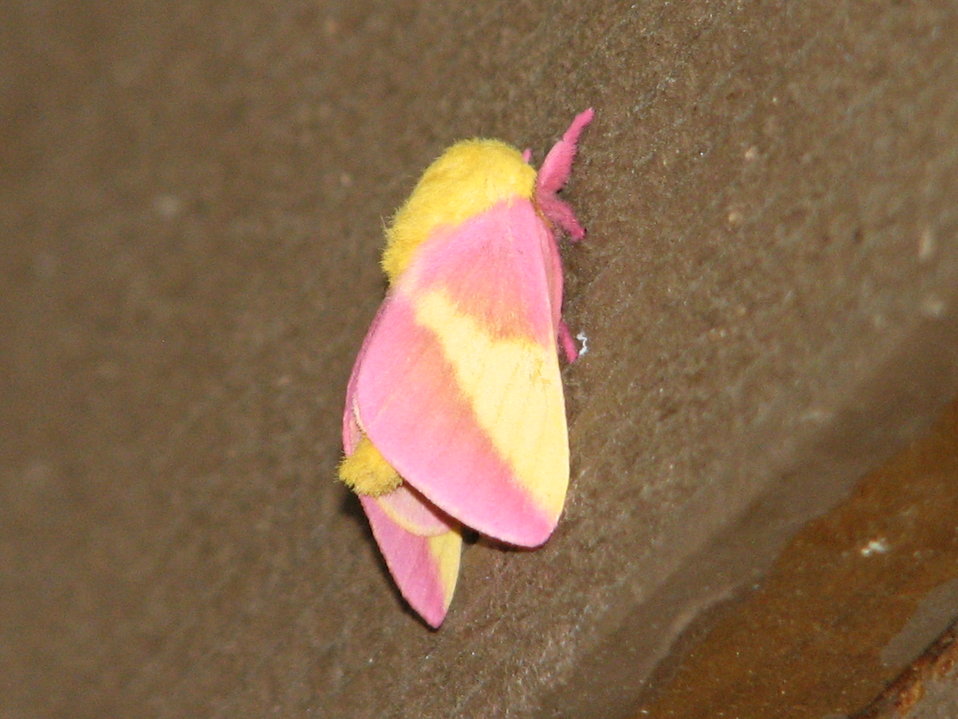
Rosy Maple